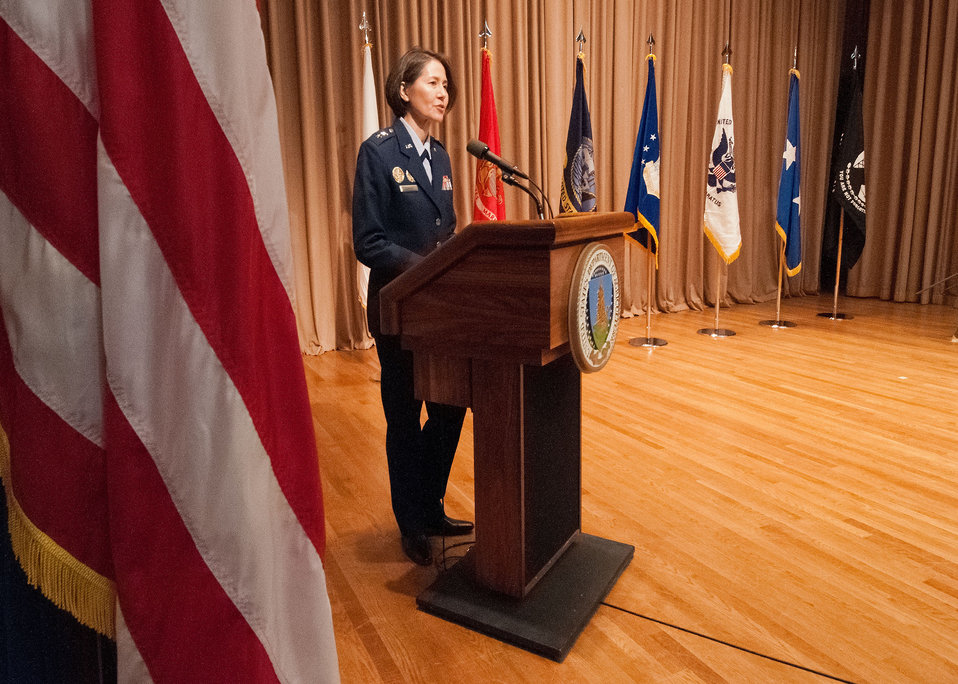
U.S. Air Force Major General Commander, Air Force District of Washington, Joint Base Andrews, MD Sharon K.G. Dunbar speaks at the U.S. Department of Agriculture's Veterans Day Observance: Honoring All Who Served, in Washington, D.C. on Wednesday, Nov. 7, 2012. The Air Force District of Washington is the Air Force voice and component to the Joint Forces Headquarters-National Capital Region.